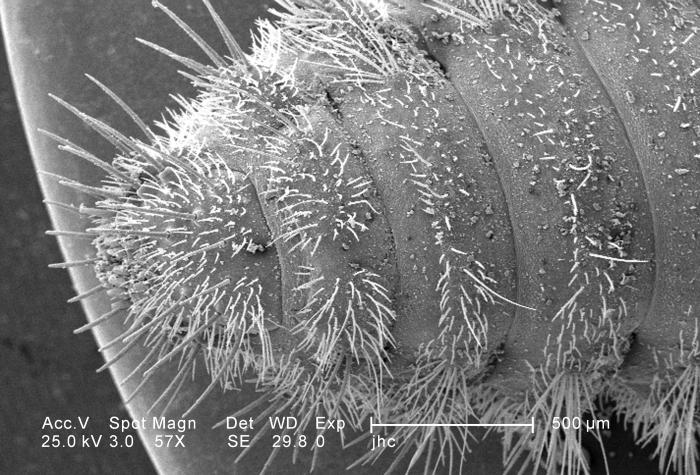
Under a low magnification of 57X, approximately twice that of PHIL 11794, this scanning electron micrograph (SEM) depicted the ventral abdominal surface of the larval staged antlion, sometimes referred to as a 'doodlebug', because of the trails it leaves in the soft sand as it hunts for prey. This arthropod, i.e., jointed legs, undergoes dramatic morphologic changes when it metamorphoses into a beautiful flying antlion lacewing.